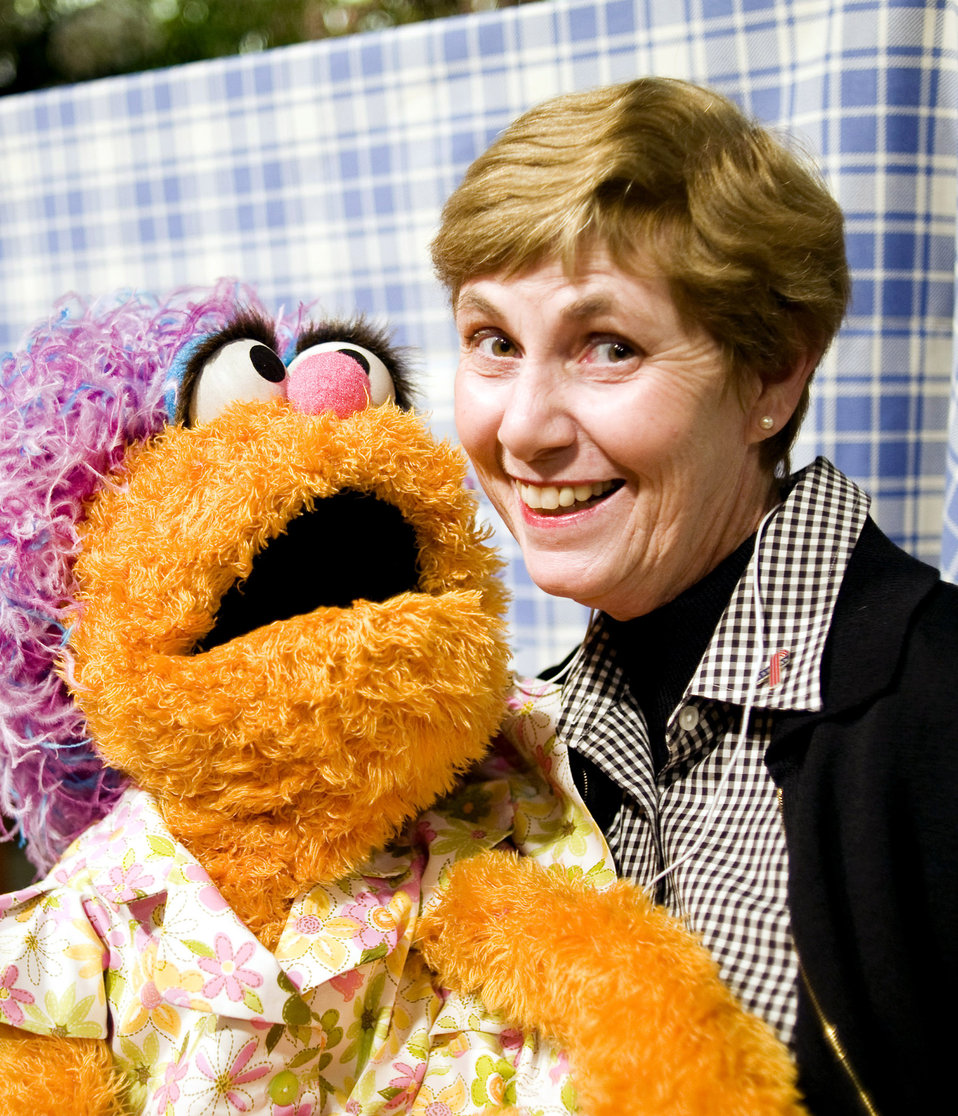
Visiting Sesame Street

Deborah Mullen, wife of Chairman of the Joint Chiefs of Staff Adm. Mike Mullen, poses with Elmo's mom, Mae, on the New York set of Sesame Workshop's third Talk, Listen, Connect video Oct. 15, 2009. The news video in the TLC series addresses the loss of a loved one and offers parents and children alike tools to deal with the grief.